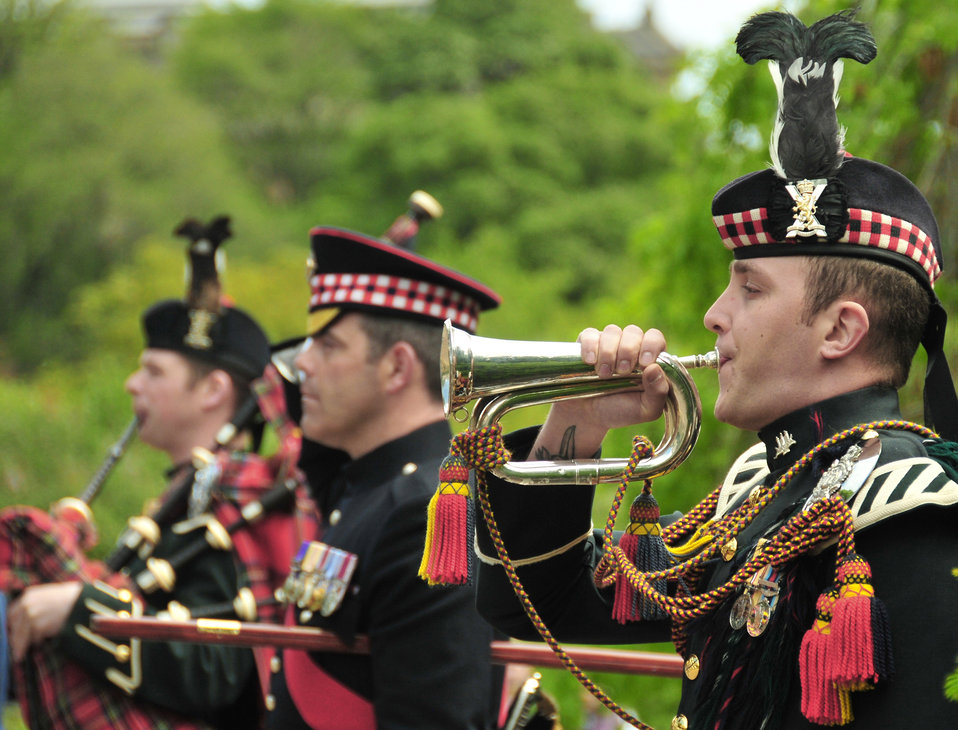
Liberty Airmen pay homage to fallen

A bagpiper from the British Army's Royal Scots Dragoon Guards participates a Memorial Day ceremony honoring fallen heroes at the Scottish-American War Memorial in Edinburgh, Scotland on May 30. The 48th Fighter Wing Honor Guard participated in the 77th annual Scottish-American Memorial Day service at the